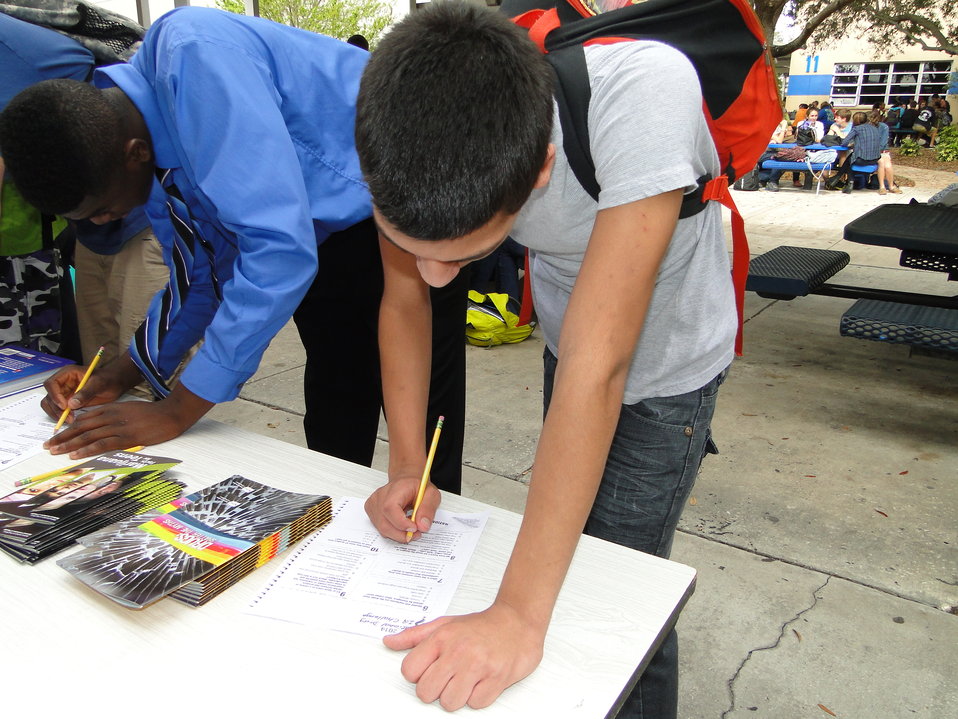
Sebring High School